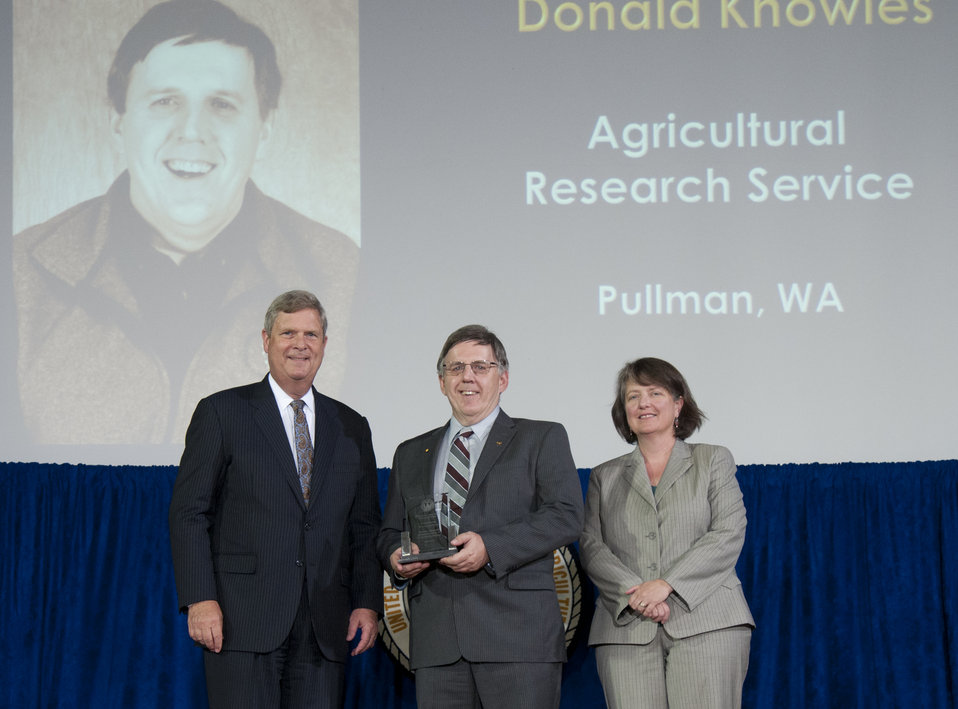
Agriculture Secretary Tom Vilsack and Agriculture Deputy Secretary Kathleen Merrigan present the Secretary’s Honor Award to Agricultural Research Service (ARS) scientist Dr. Donald Knowles at the U.S. Department of Agriculture (USDA) 64th Annual Honor Awards Ceremony in Washington, D.C. on Wednesday, Sept. 12, 2012. Knowles lead the research on controlling re-emergent foreign animal diseases in the United States, and for building a national and international research community that is training the next generation of agricultural scientists.